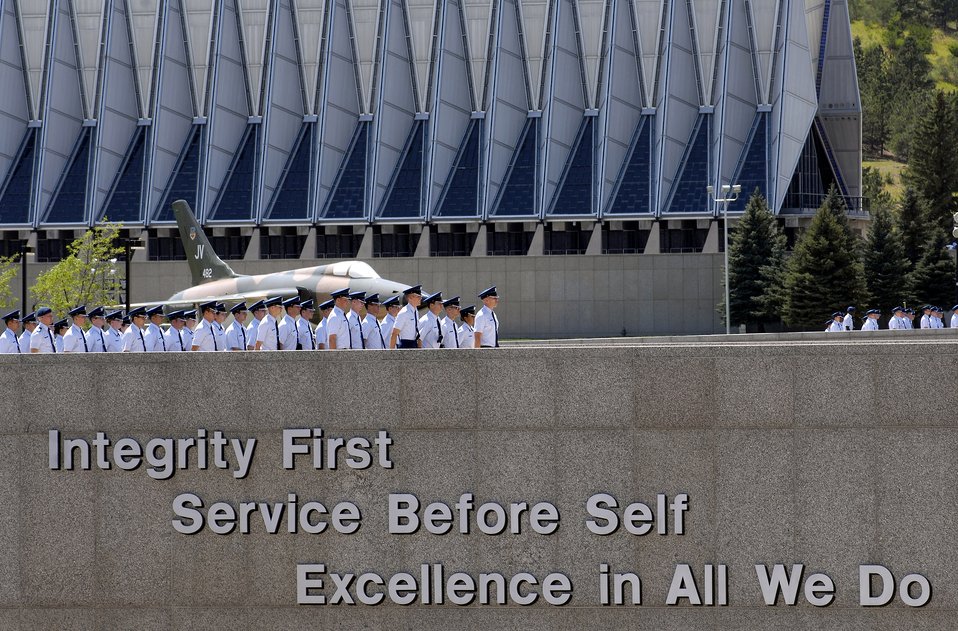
Core Values

U.S. Air Force Academy basic cadets march over the